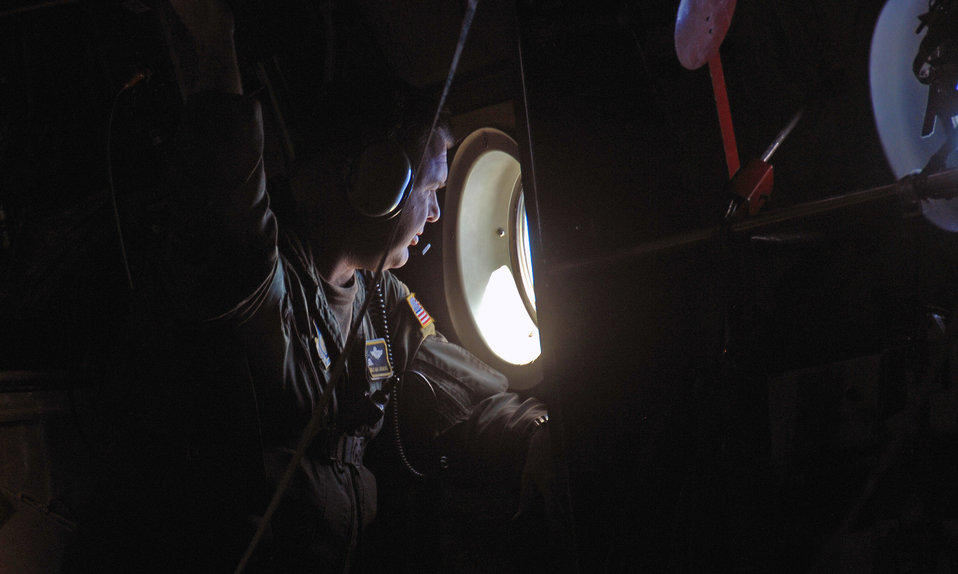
Operation Christmas Drop

Chief Master Sgt. Michael Sundberg views a drop zone from a C-130 Hercules during Operation Christmas Drop Dec.19 over the Pacific Ocean. Airmen today continue the tradition of delivering supplies to remote islands of the Commonwealth of the Northern Marianas Islands, Yap, Palau, Chuuk and Pohnpei. More than 600 pounds of donated goods were dropped over the remote islands during Operation Christmas Drop. Chief Sundberg is a loadmaster from the 36th Airlift Squadron from Yokota Air Base, Japan.